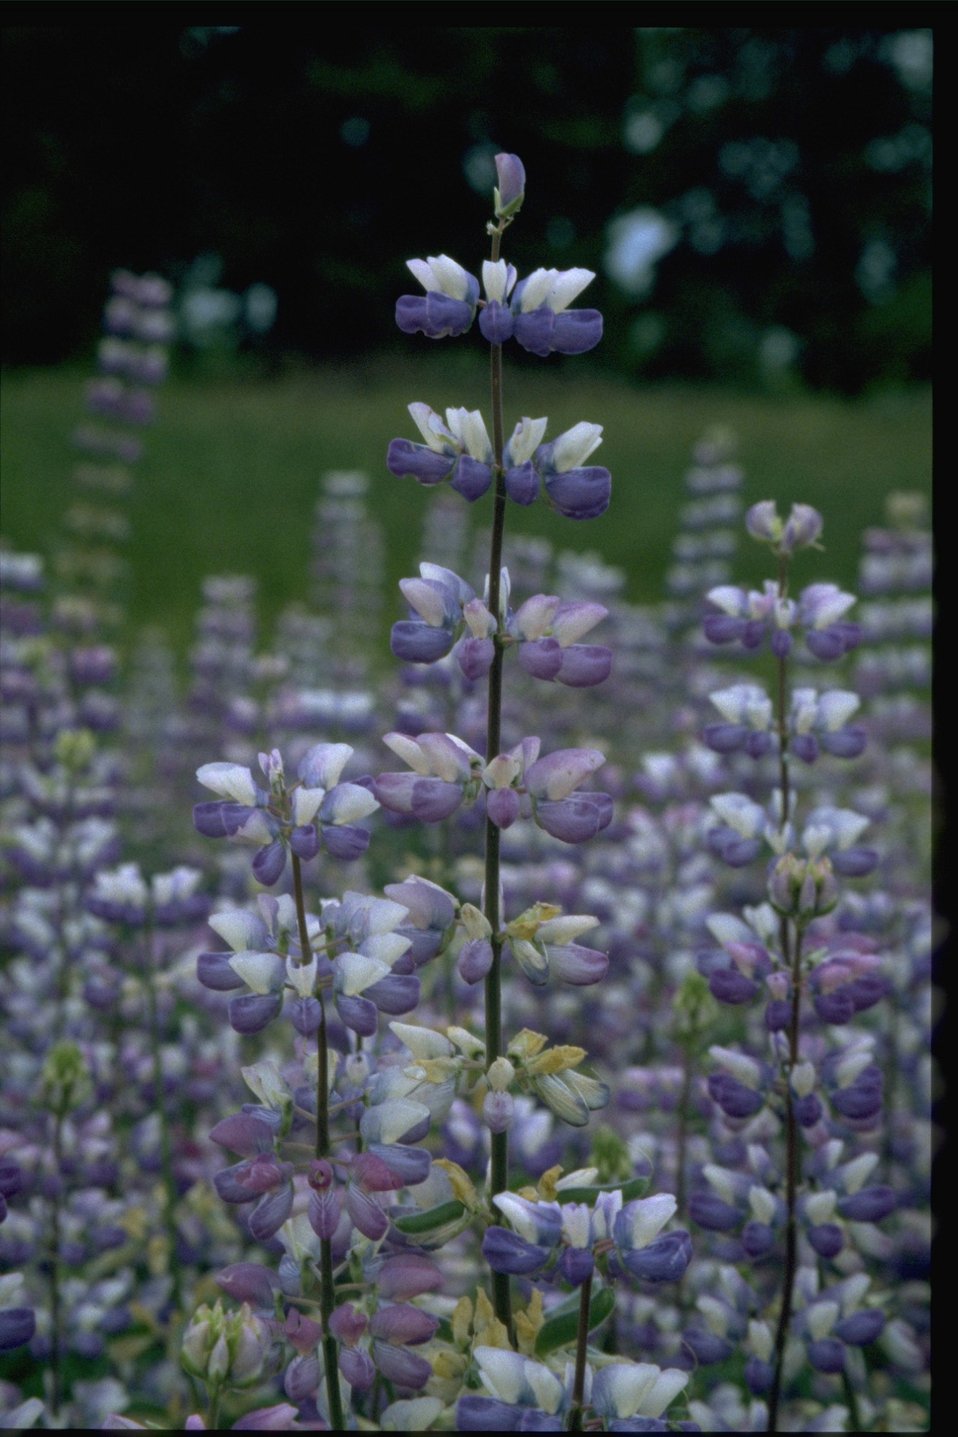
Closeup shot of lupine wildflowers (Lupinus arcticus).